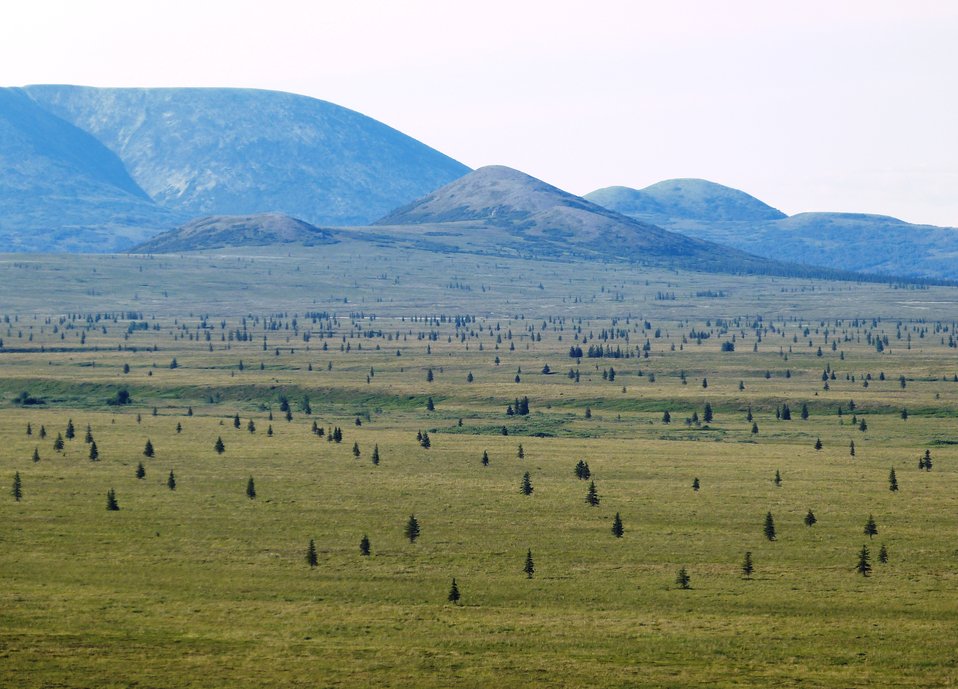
Boreal transition zone near Kilbuck Mountains, Yukon Delta National Wildlife Refuge

Photo by: Kristine Sowl,
USFWS, Yukon Delta NWR, July 11, 2013